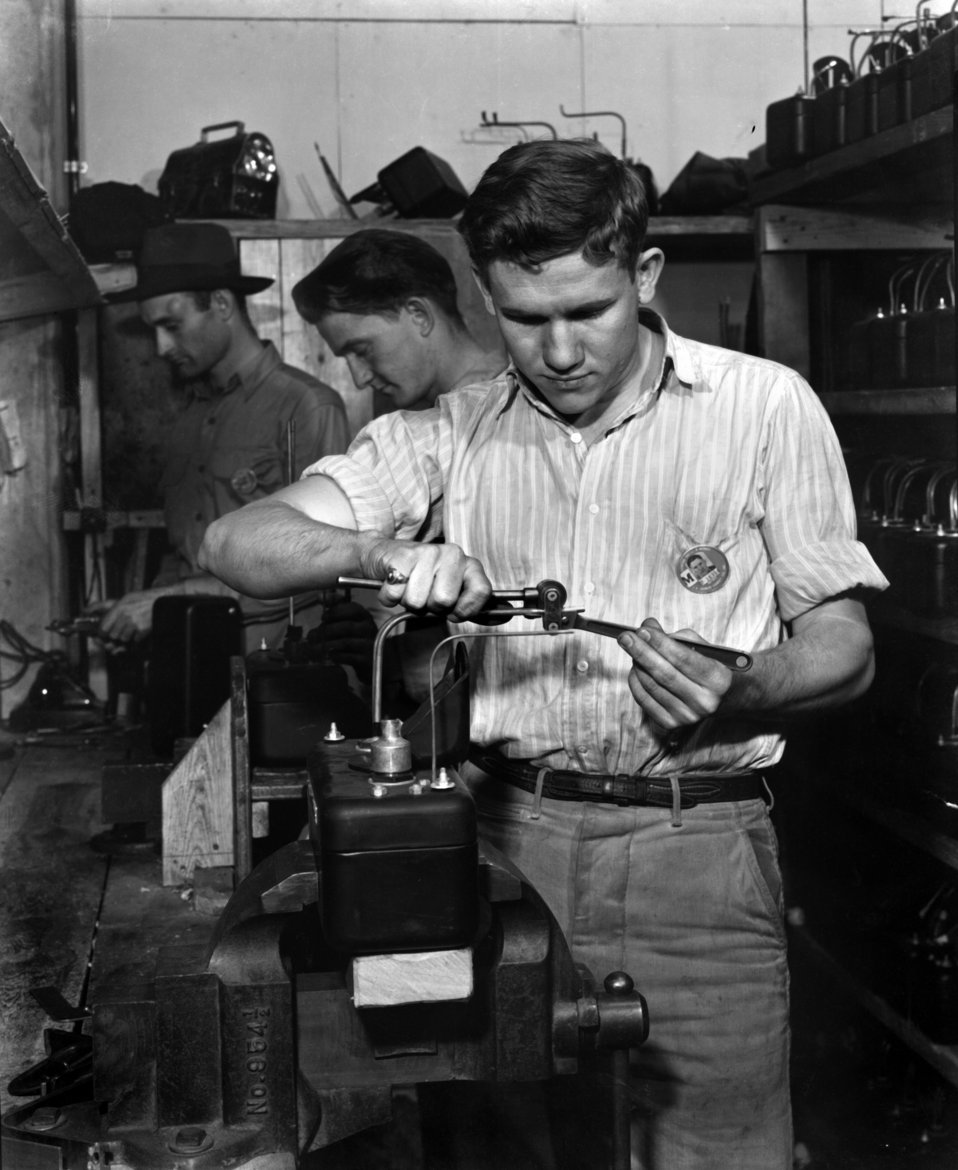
Pipe Bending in Prefab Shop K-25 Oak Ridge

K-25-68 DOE photo Ed Westcott 2-1945 Oak Ridge Tennessee